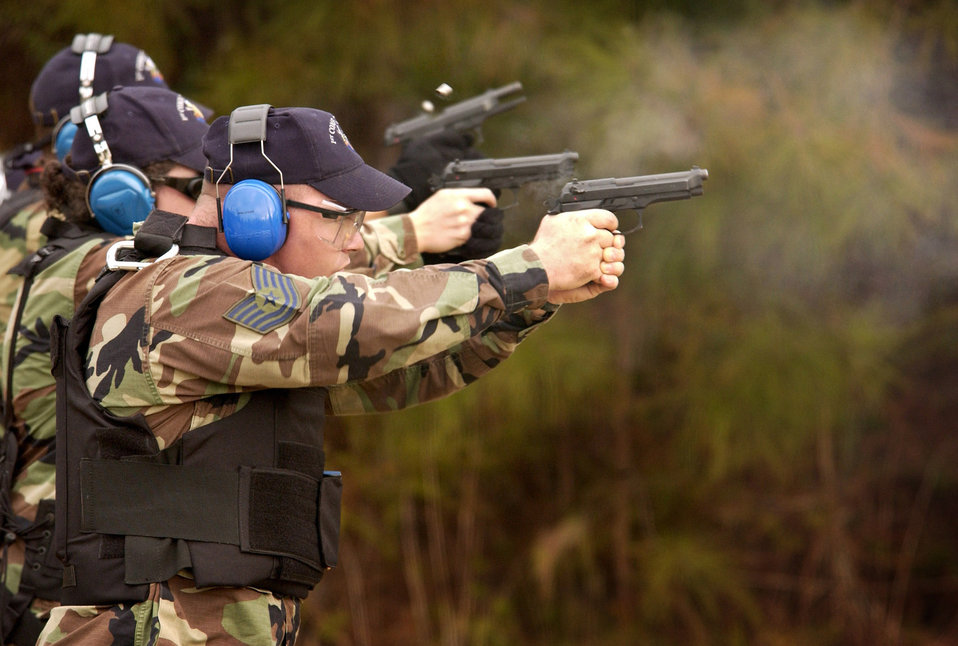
Shooting more than pictures

NAVAL WEAPONS STATION CHARLESTON, S.C. (AFPN) -- Airmen of the 1st Combat Camera Squadron fire M-9 Beretta pistols as part of the